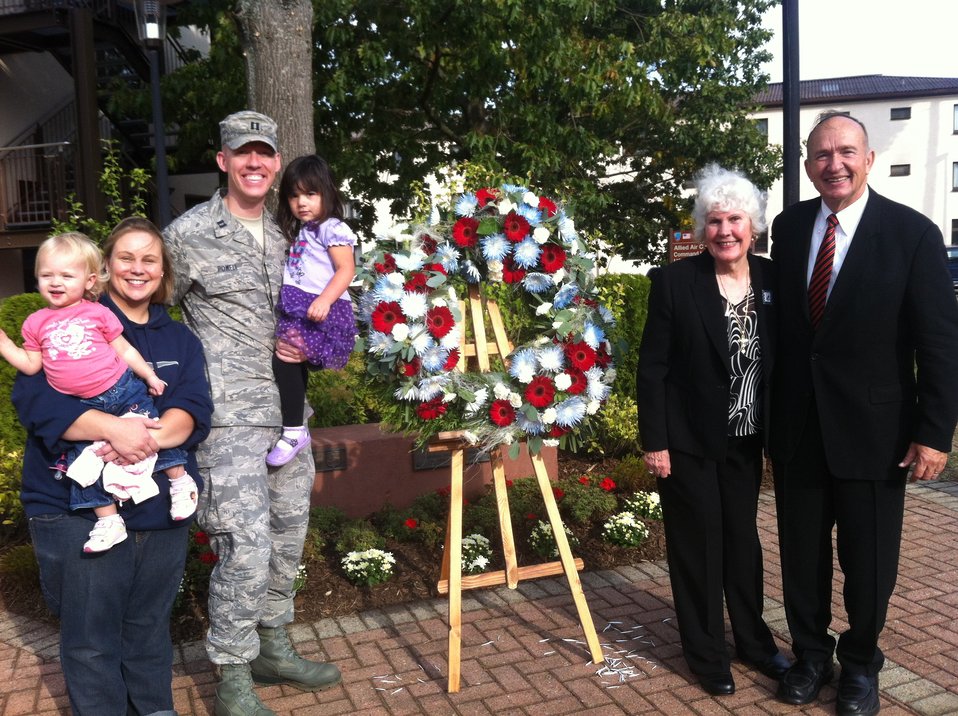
Wreath laying ceremony

Capt. Jason Powell, 435th Contingency Response Group operations officer, attends a POW/MIA wreath laying ceremony with his family and distinguished guests, retired Capt. Guy Gruters and wife, Sandy Gruters. Gruters, a former Vietnam POW, spoke to members of the 86th Airlift Wing and 435th Air Ground Operations Wing during a luncheon at the Ramstein Air Base Officers' Club Sept. 21.